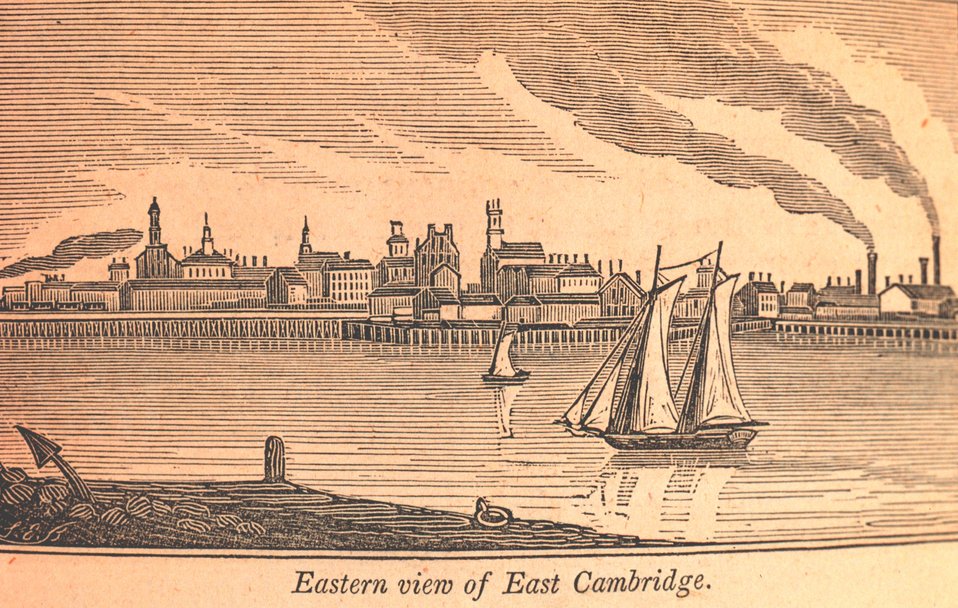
A southeastern view of East Cambridge as seen from the Warren Bridge leading into Charlestown. Glass factories are seen on the right; railroad cars on a viaduct are seen on the left. In: Historical Collections ... of Every Town in Massachusetts. 1841.